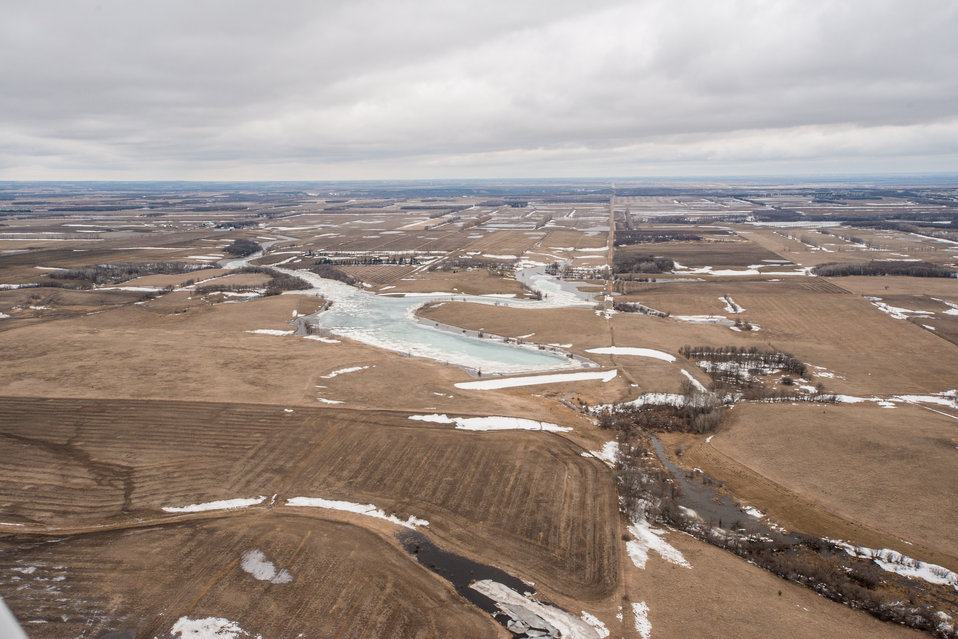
Tongue River Watershed dam T-2-2, Weiler Dam, in Pembina County, ND, part of the Red River basin, on Wednesday, May 1, 2013. To learn about the Red River Basin Initiative, see www.mn.nrcs.usda.gov/news/features13/RRBI.html.